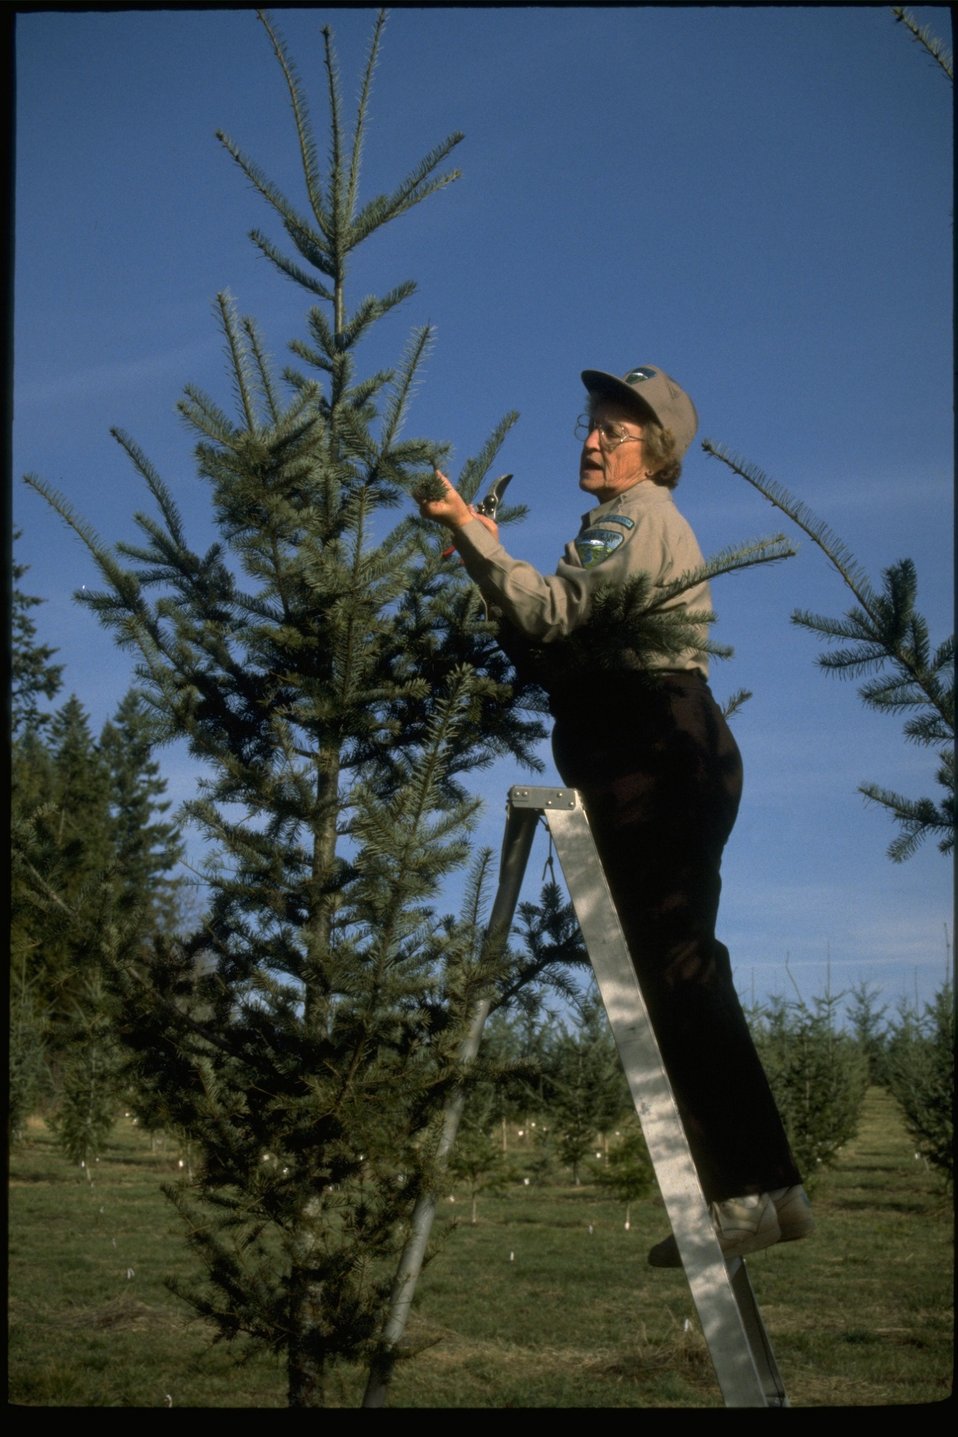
BLM employee scion cutting at the Horning Seed orchard near Carlton.